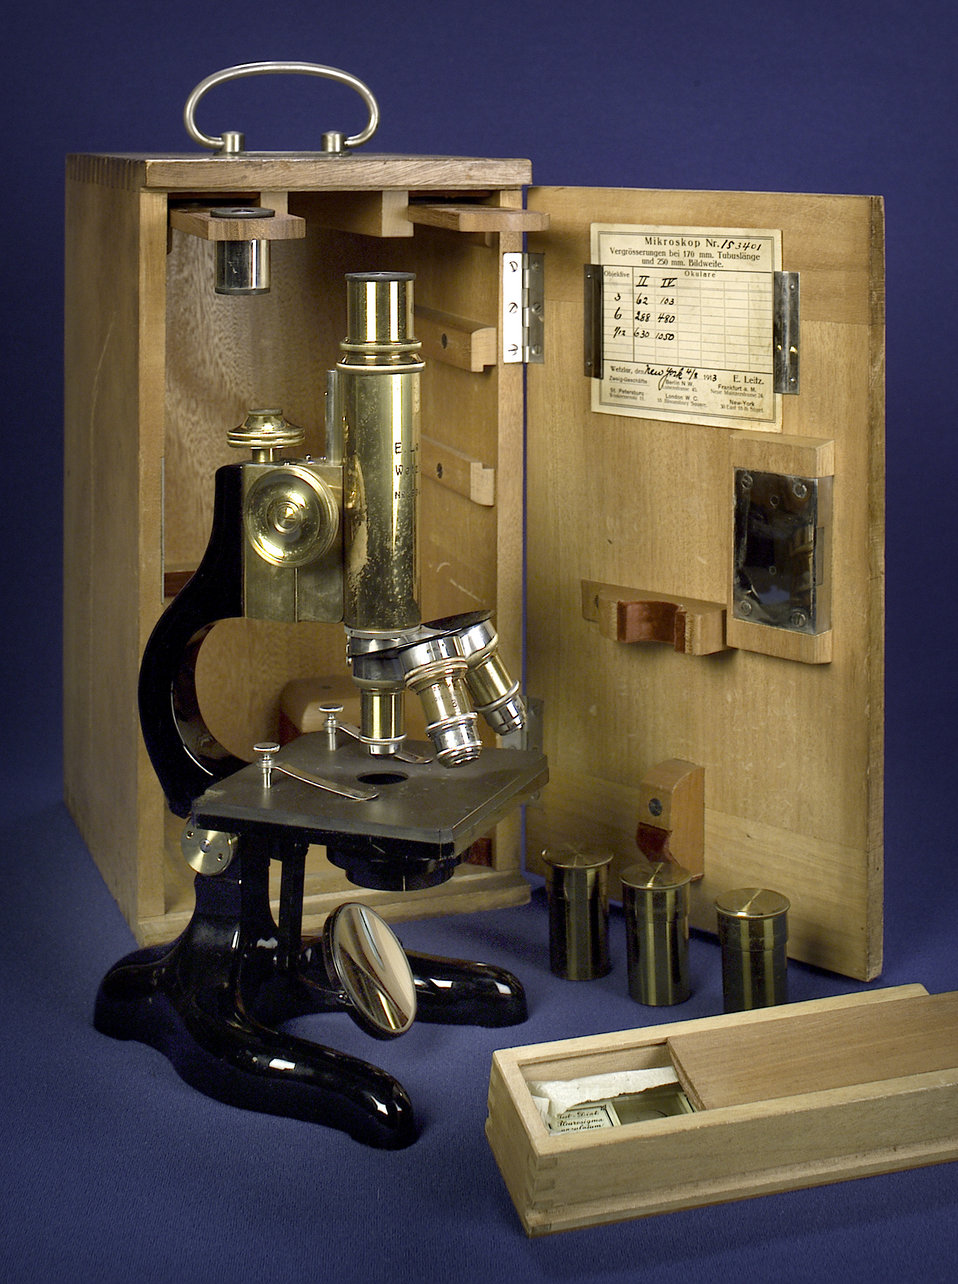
This 1913 E. Leitz-Wetzlar light microscope was used by Dr. Joseph W. Mountin in medical school and early in his career.